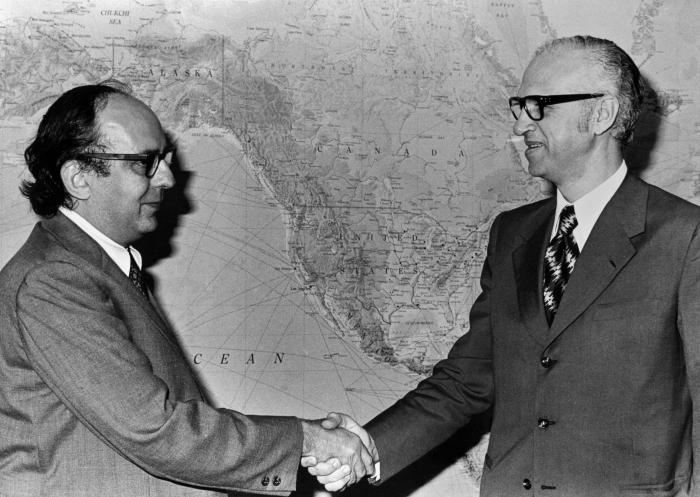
This 1970s photographs showed former Director of the Centers for Disease Control and Prevention (CDC), Dr. David J. Sencer (left) with an unknown individual.